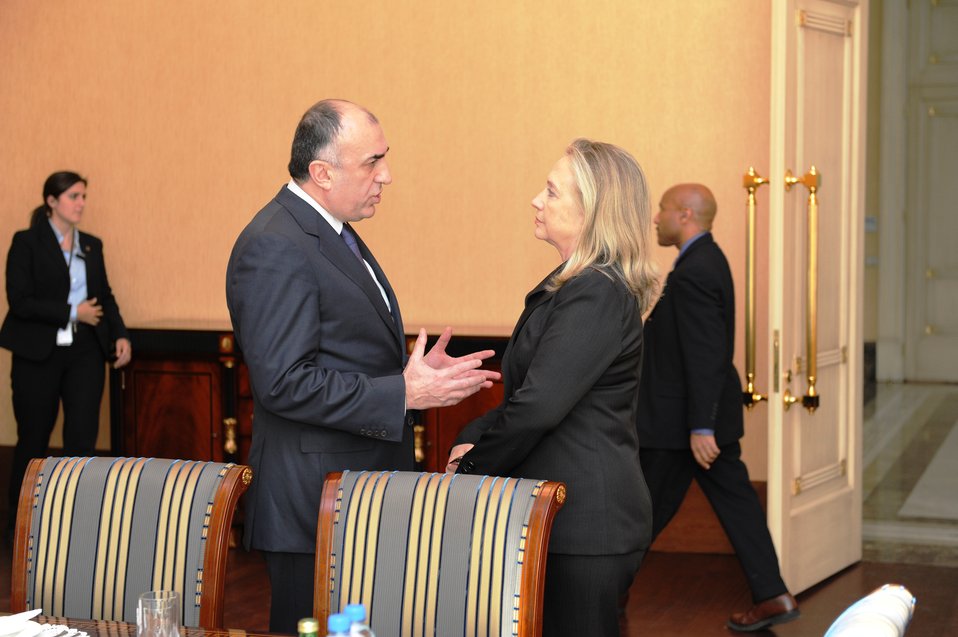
Secretary Clinton Meets With Azerbaijani Foreign Minister Mammadyarov

U.S. Secretary of State Hillary Rodham Clinton meets with Azerbaijani Foreign Minister Elmar Mammadyarov in Baku, Azerbaijan, on June 6, 2012.